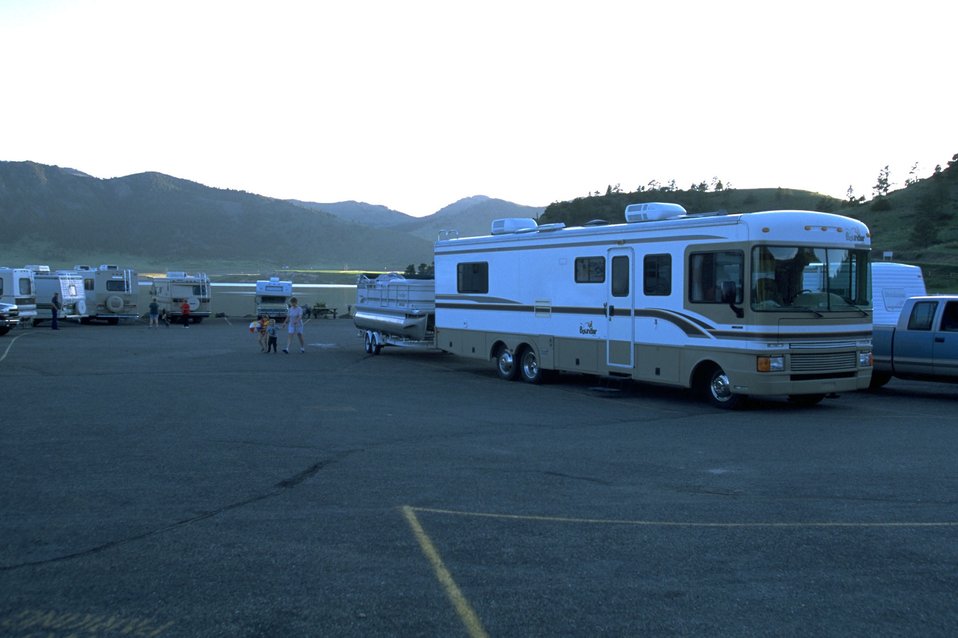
Recreational Vehicle in the parking lot of Holter Lake Campground